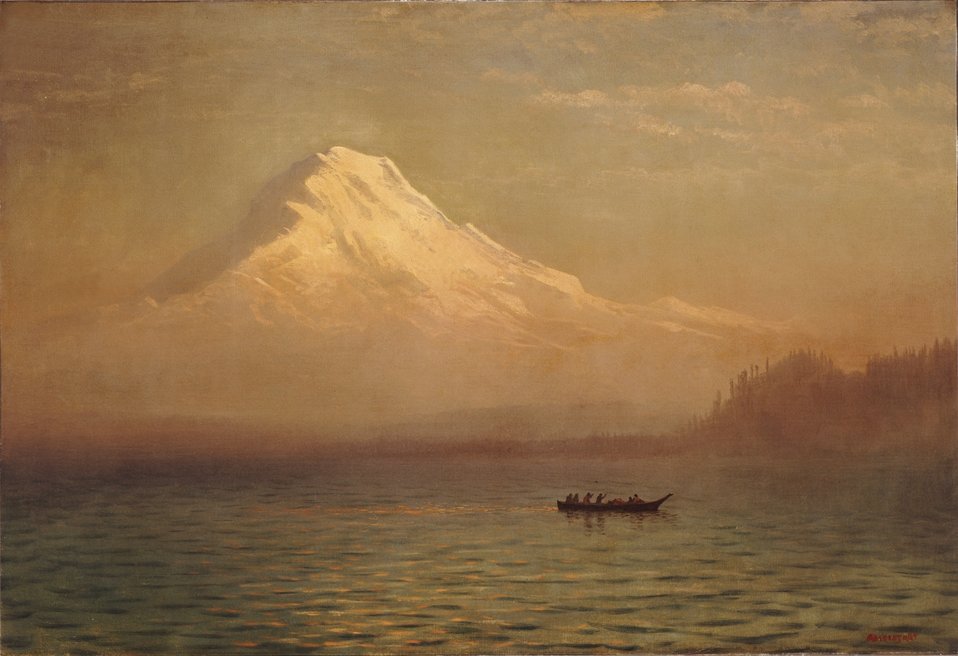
Albert Bierstadt - Sunrise on Mount Tacoma